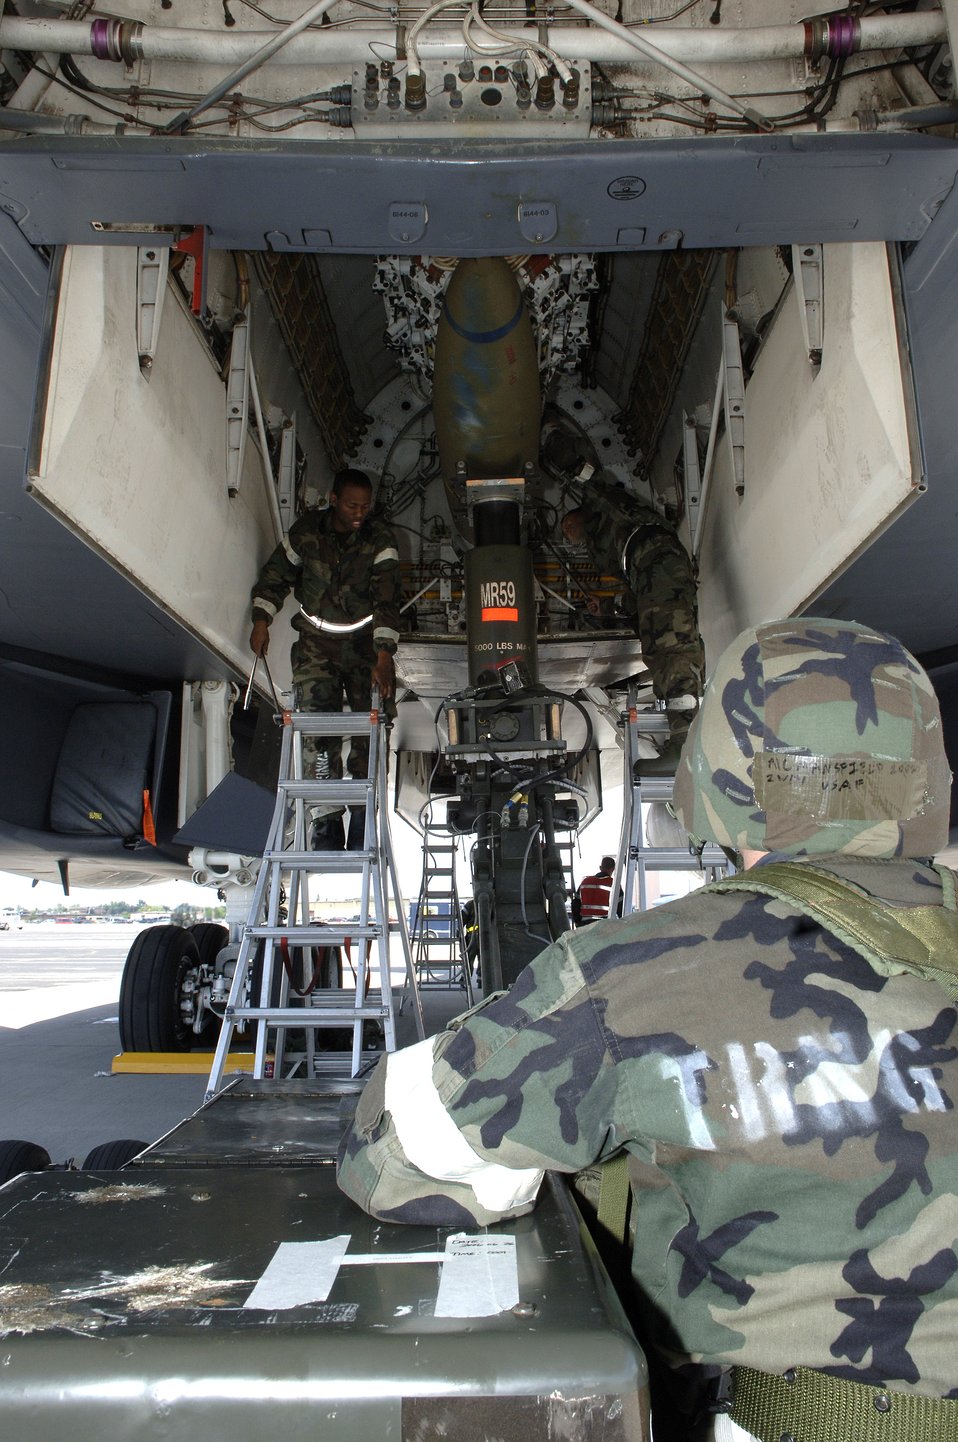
Badlands Express

Aircraft maintenance troops secure a training bomb into the bay of a B-1 Lancer at Ellsworth Air Force Base, S.D., on Monday, June 26. The base is conducting Exercise Badlands Express 06-04 to prepare for an operational readiness inspection in July. The Airmen are assigned to the 28th Aircraft Maintenance Squadron.